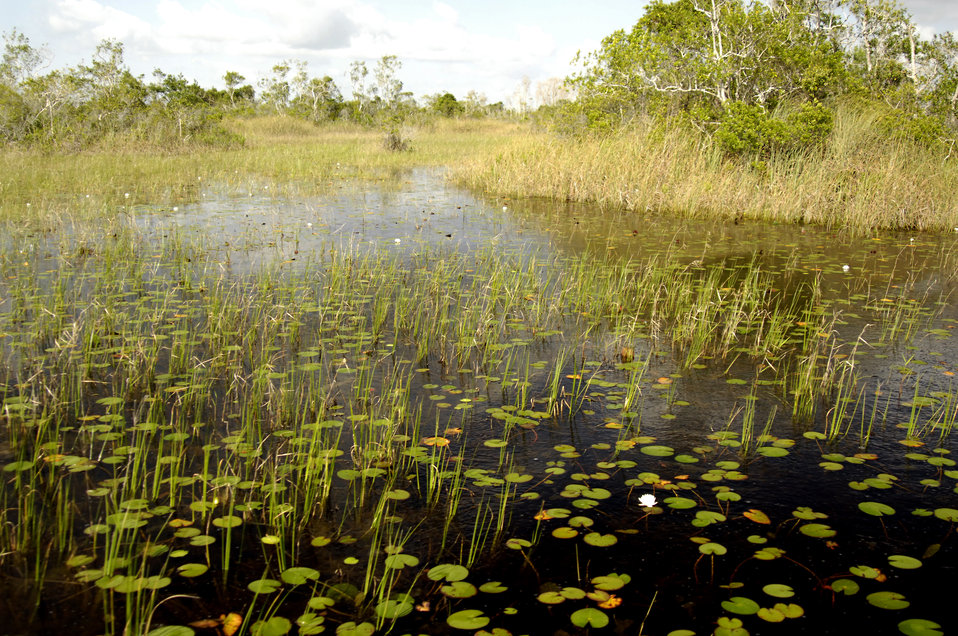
The U.S. Departments of Agriculture’s (USDA) Forest Service (FS) and U.S. Department of Interior’s (DI) National Park Service (NPS) work to preserve and restore the Everglades National Park on April 7, 2010. Water in south Florida once flowed freely from the Kissimmee River to Lake Okeechobee and southward over low-lying lands to the estuaries of Biscayne Bay, the Ten Thousand Islands, and Florida Bay. This intricate system evolved into a finely balanced ecosystem that formed the biological infrastructure for the southern half of the state. However, due to man’s interference the draining process to transform wetland to land ready to be developed severely damaged the ecosystem and the species it supported. The Everglades National Park was established in 1947 by early conservationists, scientists, and other advocates to conserve the natural landscape and prevent further degradation of its land, plants, and animals.